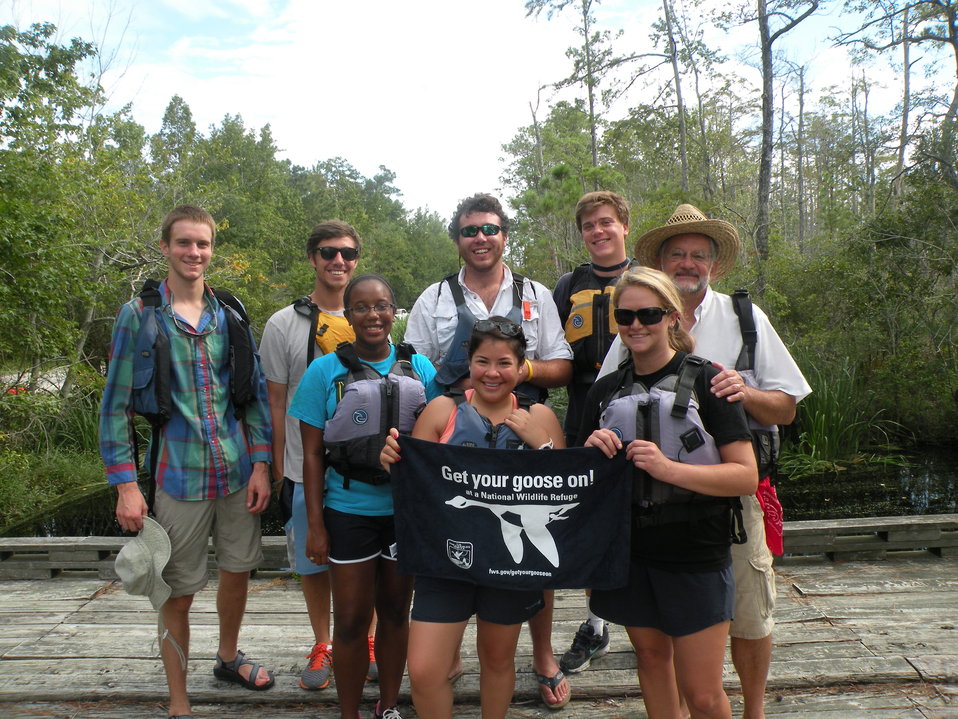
Get Your Goose On!

Students from NC State University Get Their Goose On! While visiting the paddling trail at ARNWR.

Ashlyn Knight/USFWS